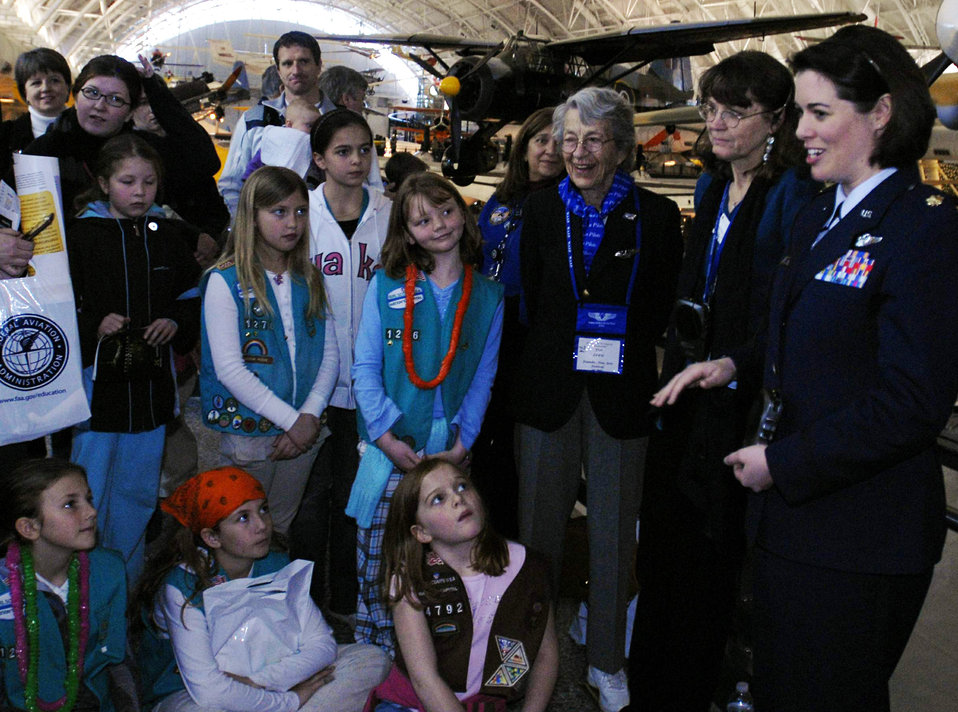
Former Thunderbirds pilot 'an inspiration' for young girls

Maj. Nicole Malachowski answers questions at the Women in Aviation and Space Family Day March 14 at the National Air and Space Museum's Hazy Center in Chantilly, Va. The event featured female air and space pioneers, including astronauts, a World War II Women Airforce Service Pilot and several aerospace experts at exhibit booths where visitors could learn hands-on about science and flying. Major Malachowski was the first female Thunderbirds pilot.